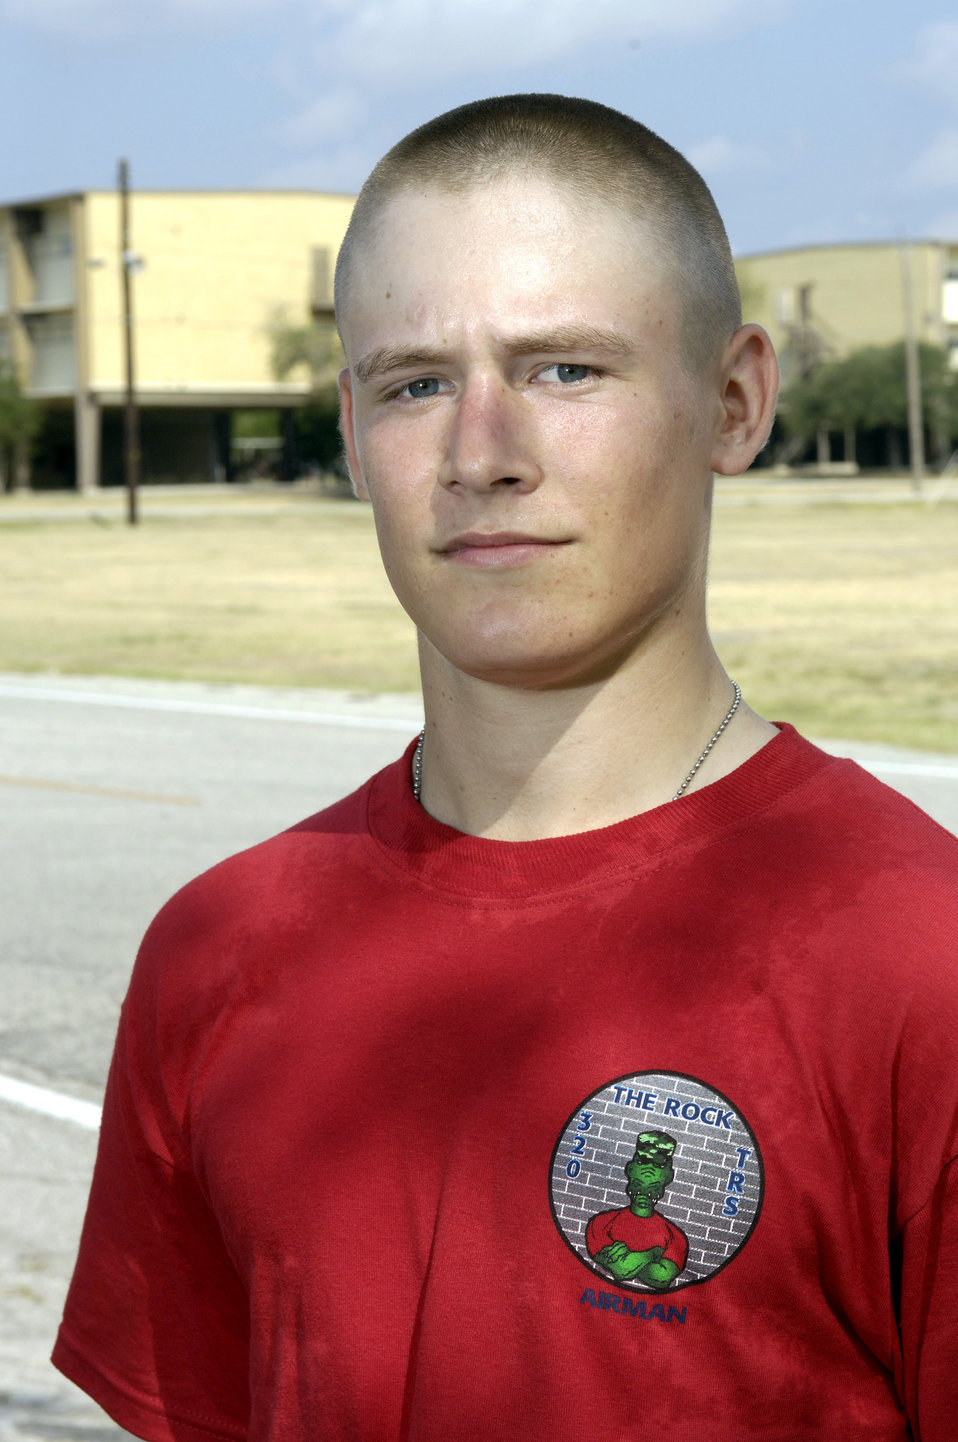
Basic training grads say 4th of July feels different now

Airman Shane Robinson graduated from basic military training at Lackland Air Force Base, Texas, on Friday, June 30. The Airman completed a two-and-one-half-mile run June 29. Since donning the Air Force uniform, he feels more connected to the Fourth of July holiday.